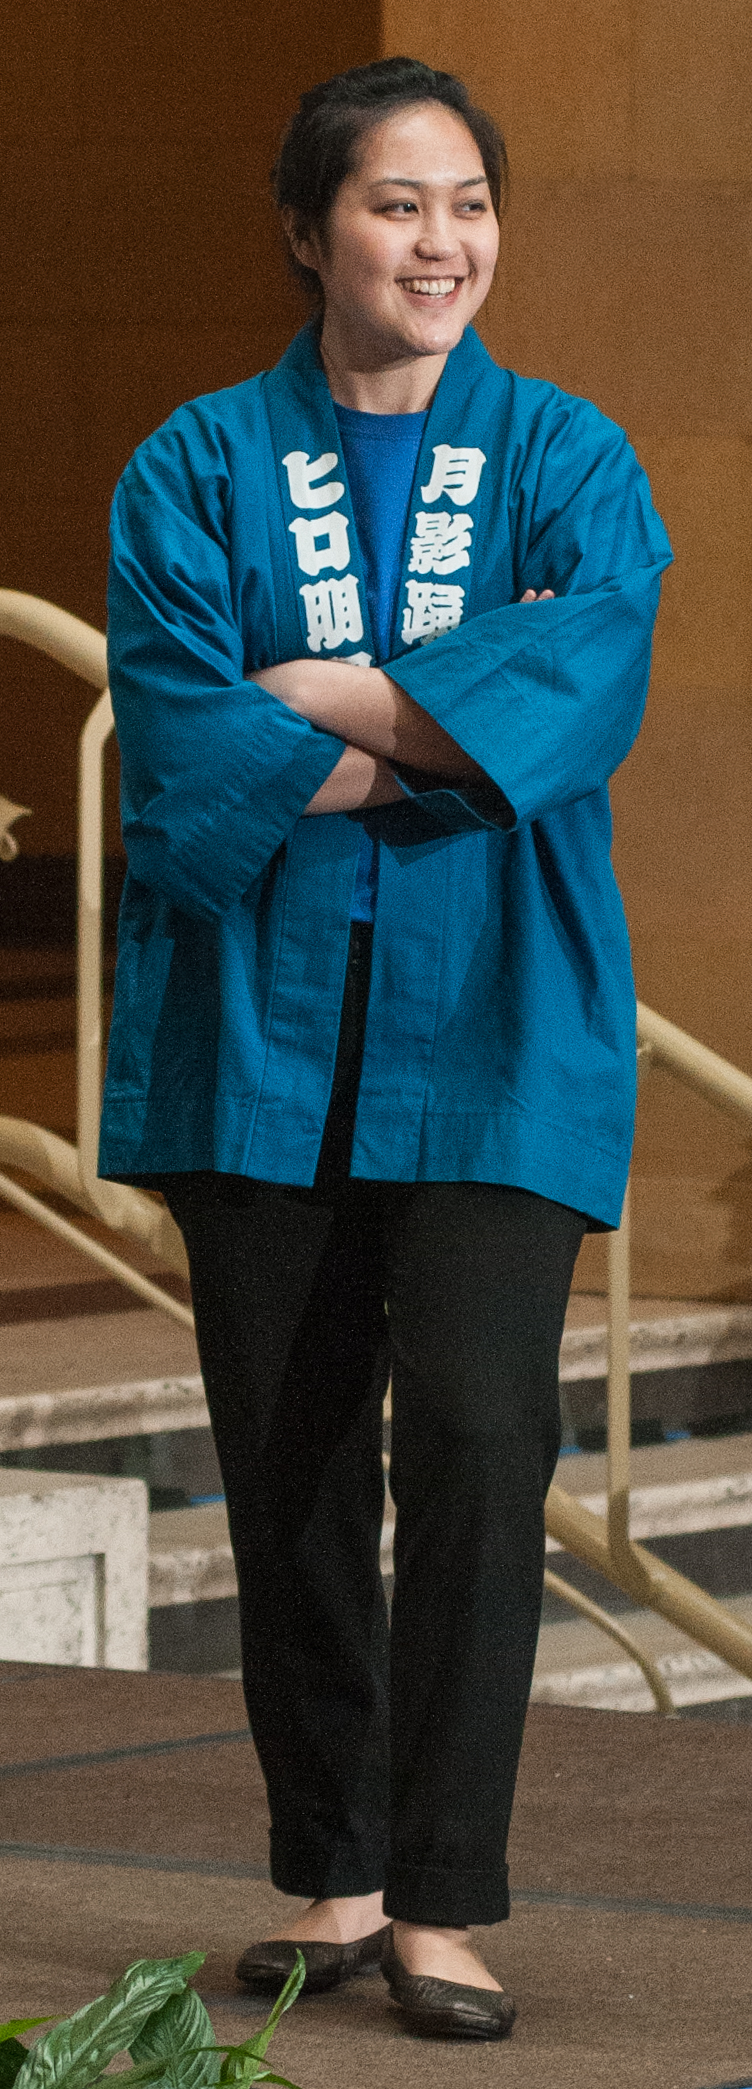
Traditional clothing from various Asian countries were demonstrated during this show of clothing, part of the U.S. Department of Agriculture (USDA) Asian Pacific American Heritage Month Observance program, at the USDA headquarters, Whitten Building patio, in Washington, D.C., on Thursday, May 23, 2013. This year’s theme is “Building leadership; Embracing the Cultural Values and Inclusions.”